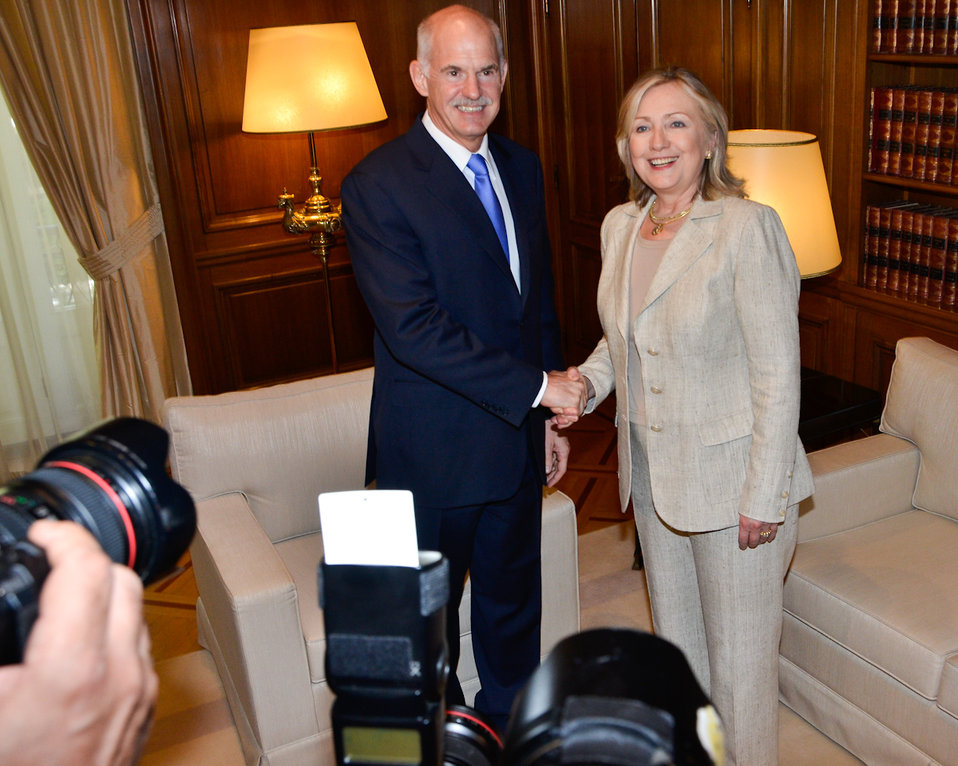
Secretary Clinton Shakes Hands With Greek Prime Minister Papandreou

U.S. Secretary of State Hillary Rodham Clinton shakes hands with Greek Prime Minister George Papandreou in Athens, Greece, on July 17, 2011.